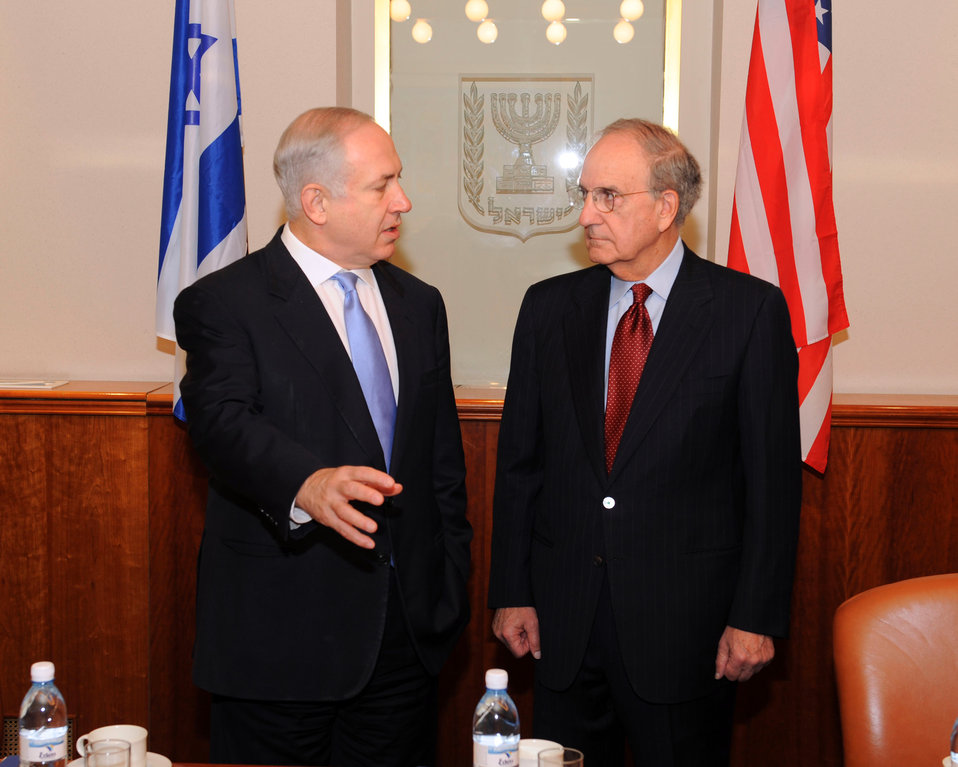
Special Envoy Mitchell Meets With Israeli Prime Minister

U.S. Special Envoy to the Middle East George J. Mitchell meeting with Israeli Prime Minister Benjamin Netanyahu at the Prime Minister Office in Jerusalem October 30, 2009.